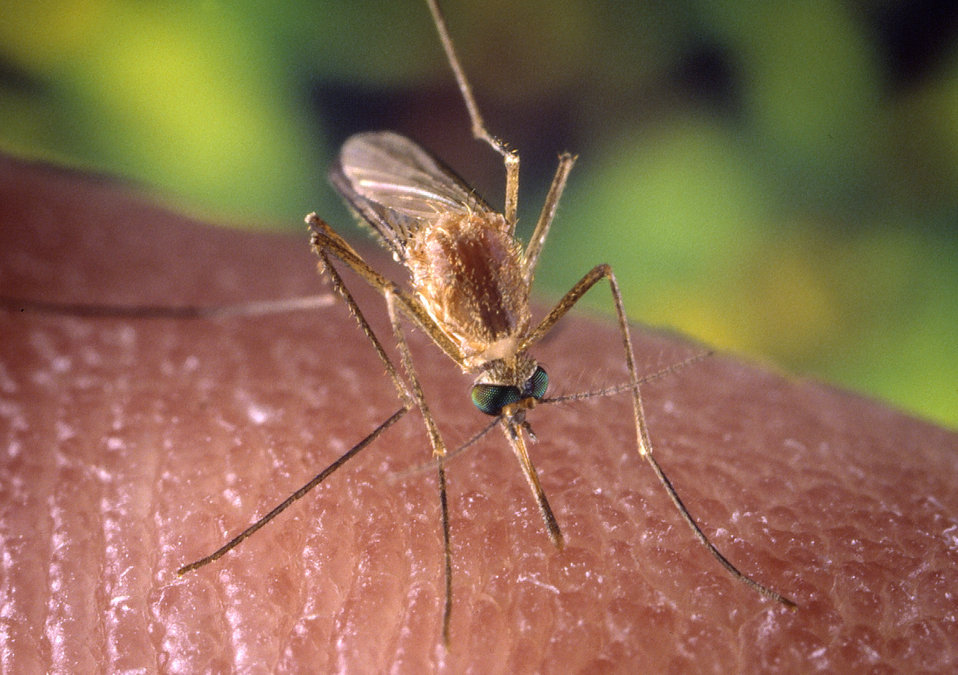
A Culex quinquefasciatus mosquito on a human finger.